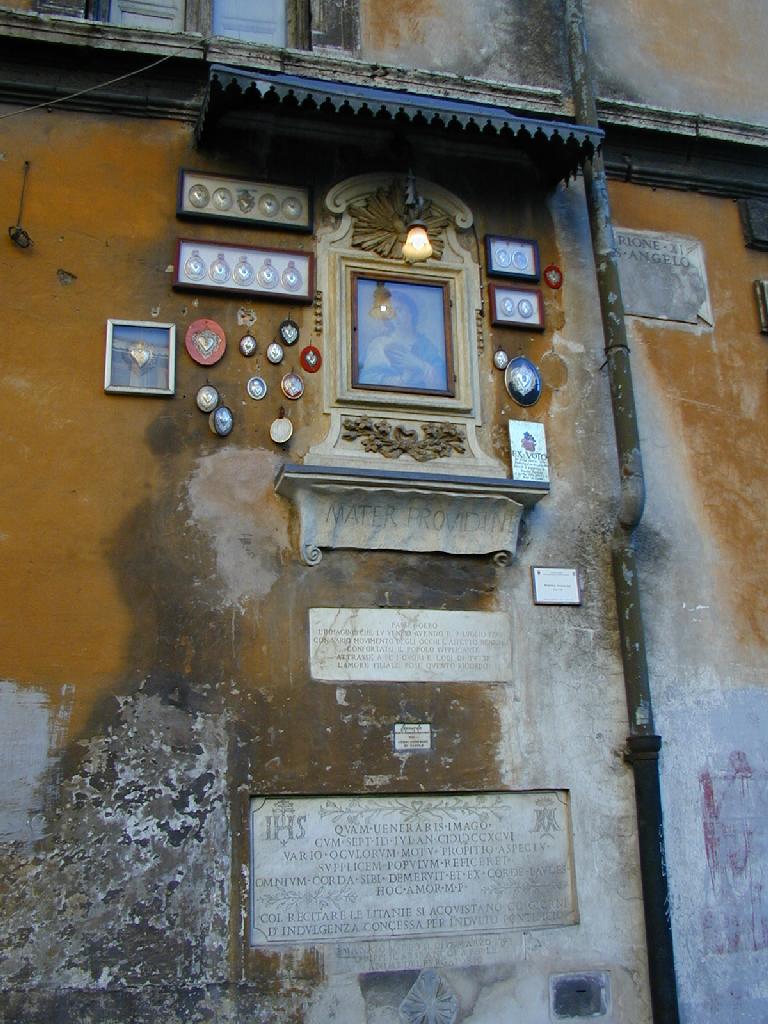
010101 11 madonna alle bottehe oscure 1